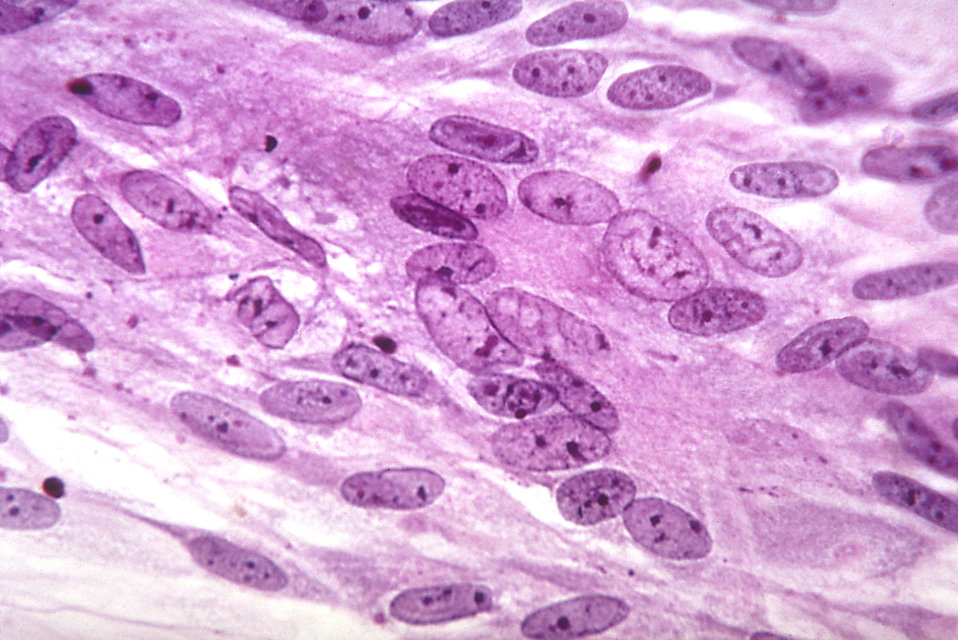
This photomicrograph reveals the intranuclear inclusions produced by varicella virus grown in a tissue culture; Magnified 500X.